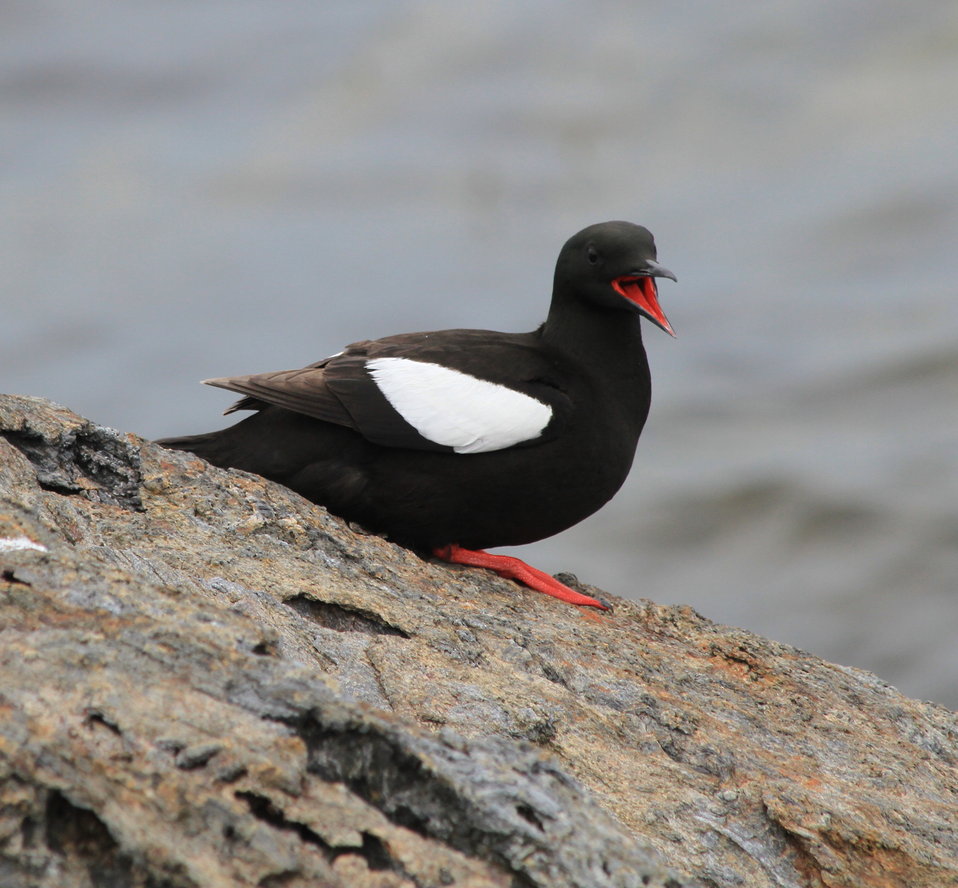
Black Guillemot

On Metinic Island, Maine Coastal Islands NWR. Summer with the Seabirds blog: mainecoastalislands.wordpress.com/2010/07/23/metinic-isla...